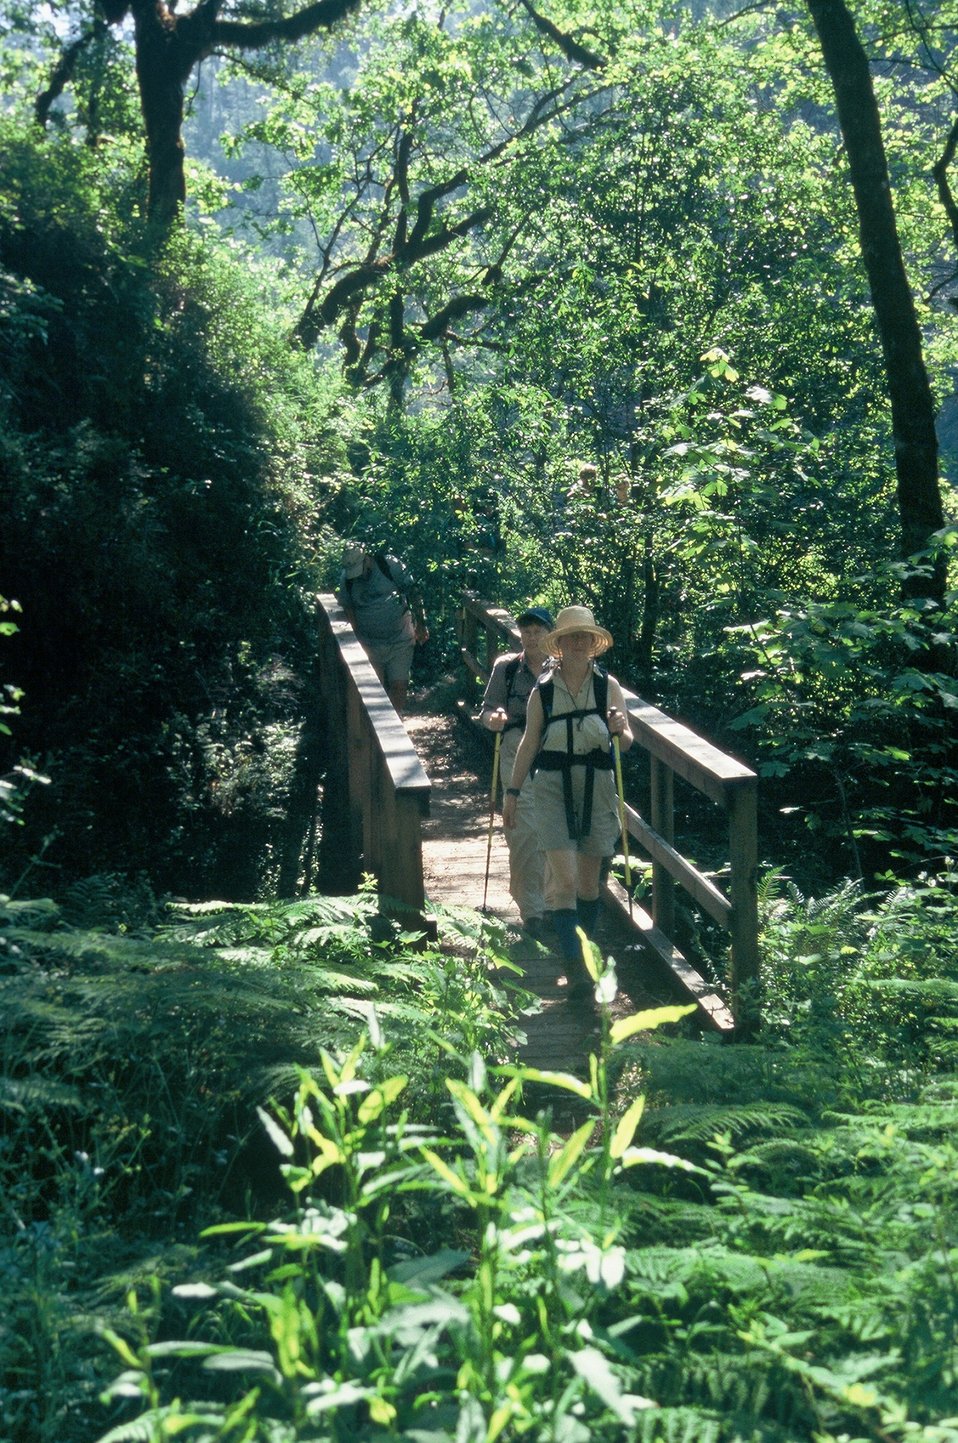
Wild section of the Rogue River from Grave Creek to Foster Bar May 19 to May 22.